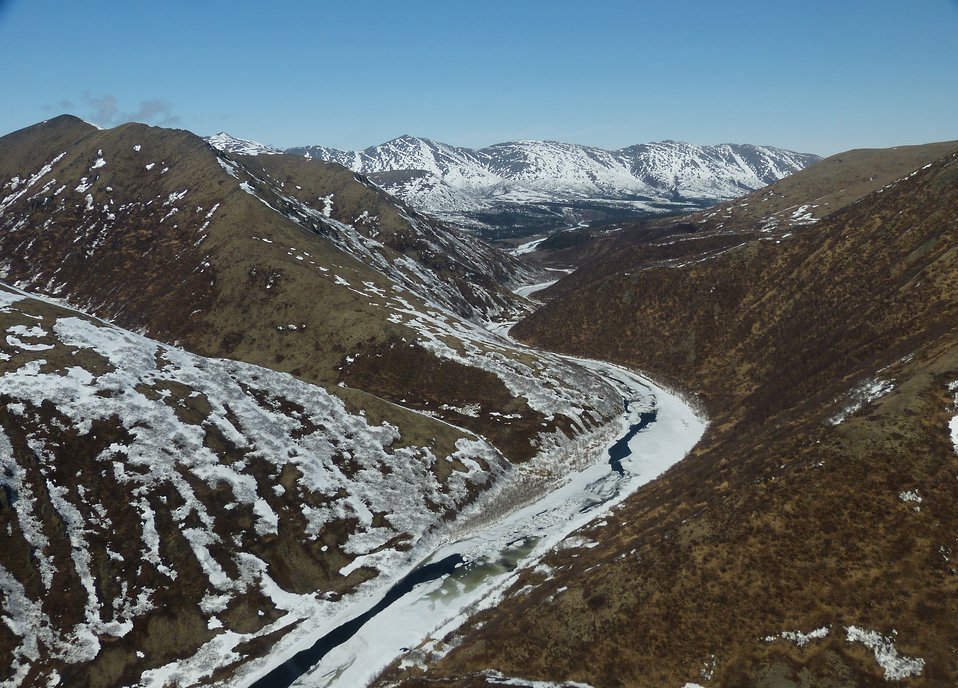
Kilbuck Mountains May2013 KSowl

Cliff-nesting raptor survey, Kilbuck Mountains, Yukon Delta National Wildlife Refuge

Photo credit: Kristine Sowl,
USFWS, YDNWR